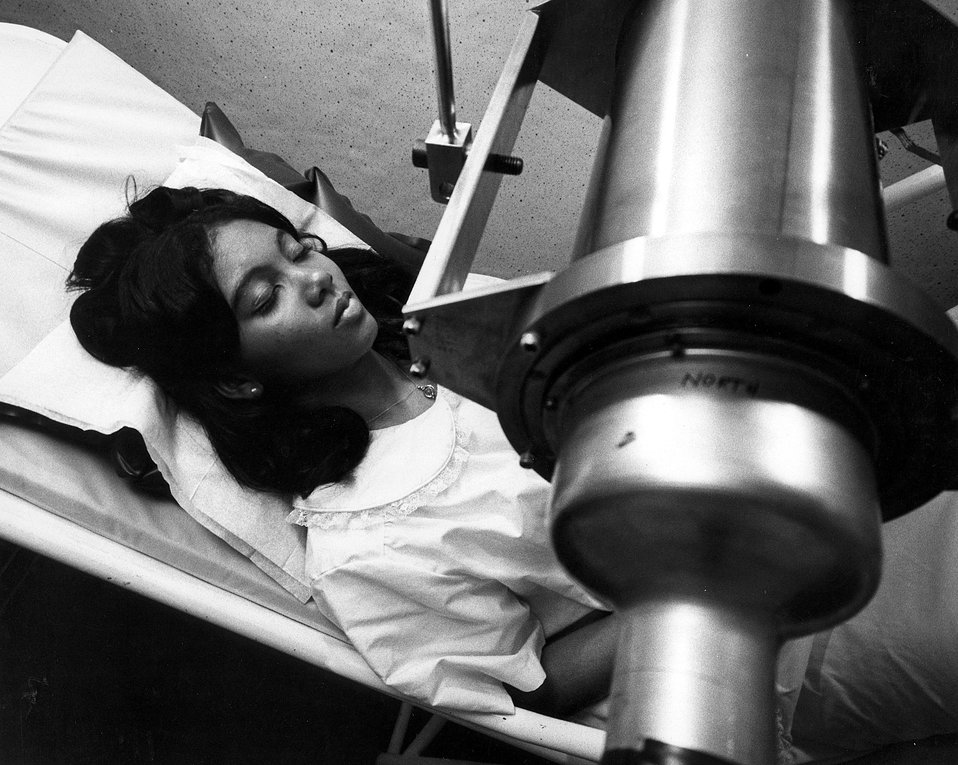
Specialized facilities to measure extremely small amounts of radiation in the human body are available in Argonne National Laboratory's Center for Human Radiobiology.